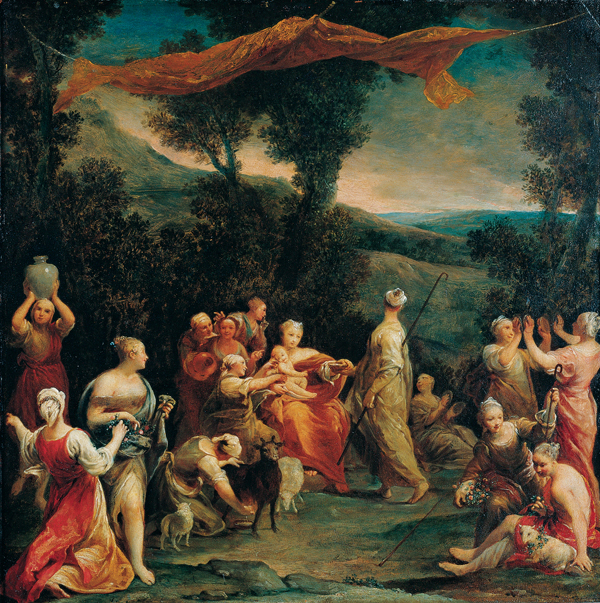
'Jupiter Among the Corybantes (Korybantes)', oil on copper painting by Giuseppe Maria Crespi